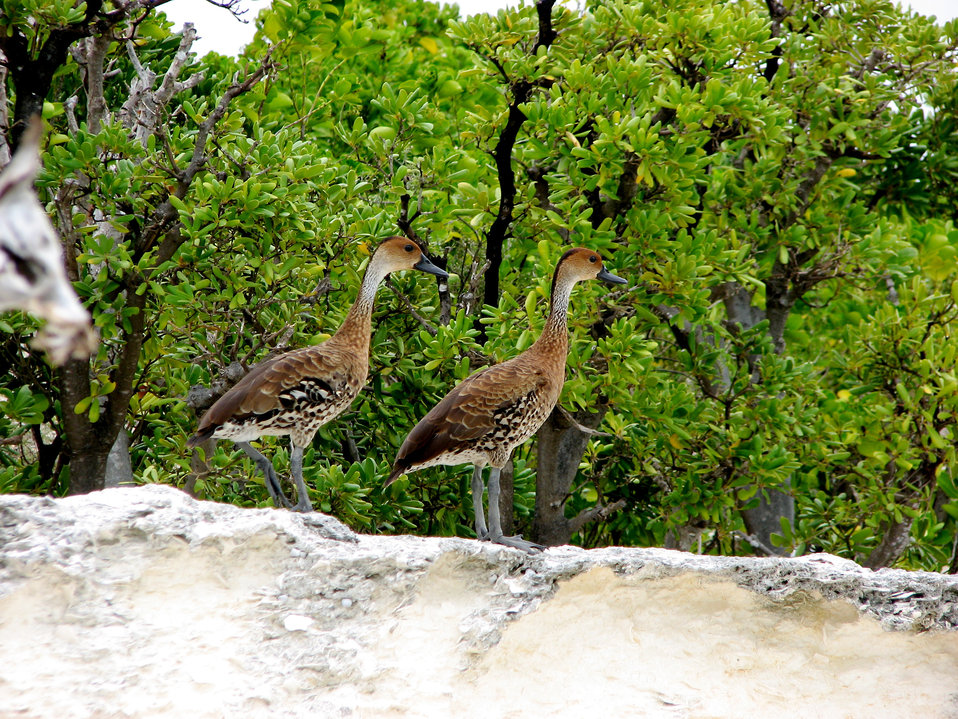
WIWD pair on Rabbit Island - 2

West Indian whistling ducks on Rabbit Island, Anguilla.